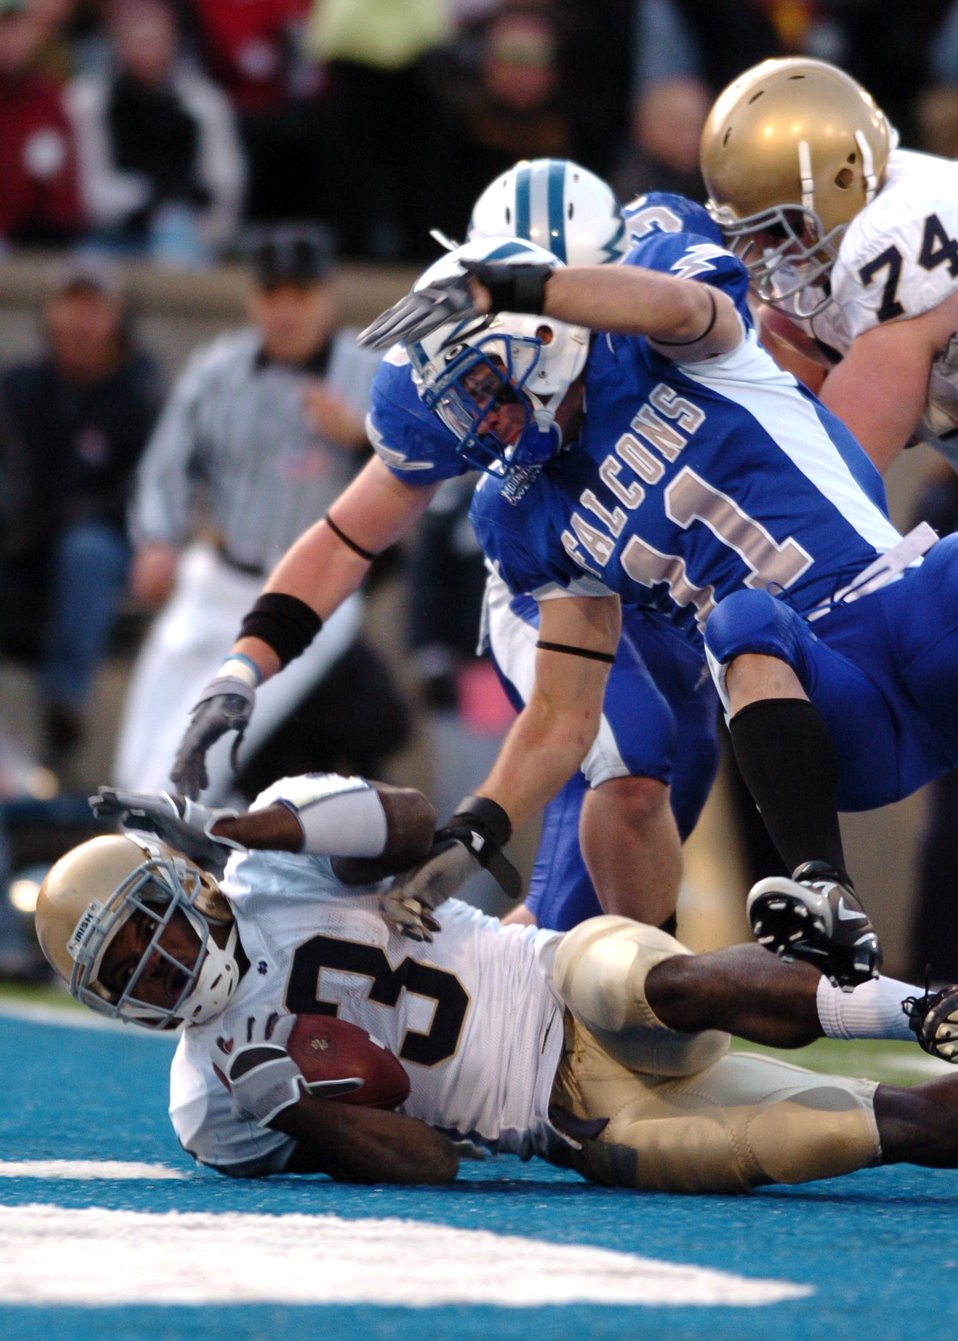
Irish Score

Notre Dame running back Darius Walker breaks through the Falcons? line for a fourth-quarter touchdown Saturday. Walker led the Irish with 153 yards on the ground as 8th-ranked Notre Dame defeated Air Force, 39-17.